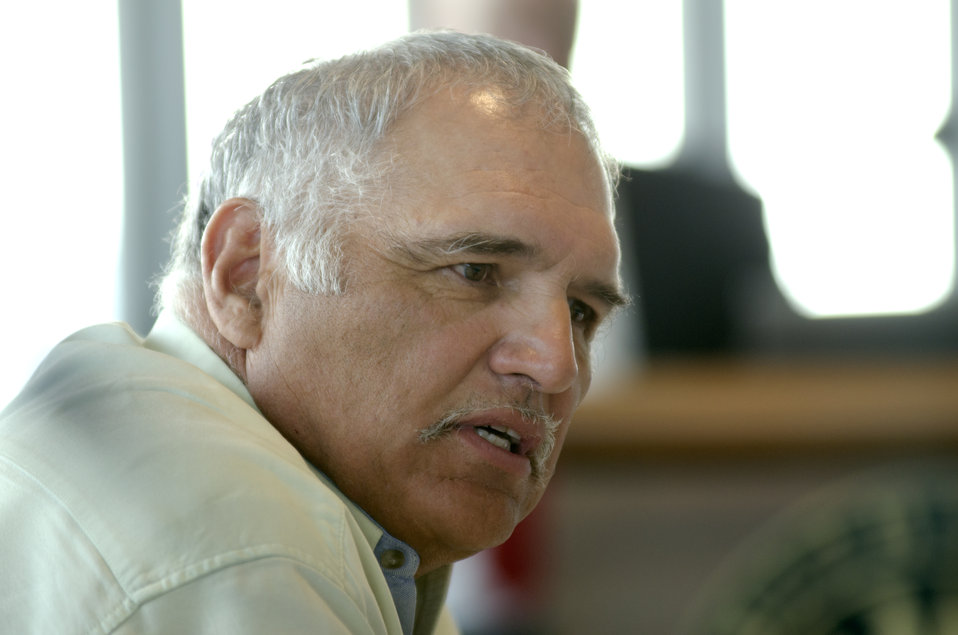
Gerald Lunak, Natural Resources Director, Blackfeet Nation, Cut Bank, Mont., speaking at the first business meeting of the U.S. Department of Agriculture’s (USDA) Council for Native American Farming and Ranching (CNAFR) held at the National Museum of the American Indian in Washington, D.C., on Tuesday, Aug. 14, 2012. CNAFR was created to advise the Secretary on ways to eliminate barriers to participation for Native American Farmers and Ranchers in USDA programs. The Council was established as part of the Keepseagle settlement, and is conducted under the oversight of USDA's Office of Tribal Relations under the Office of the Secretary of Agriculture.